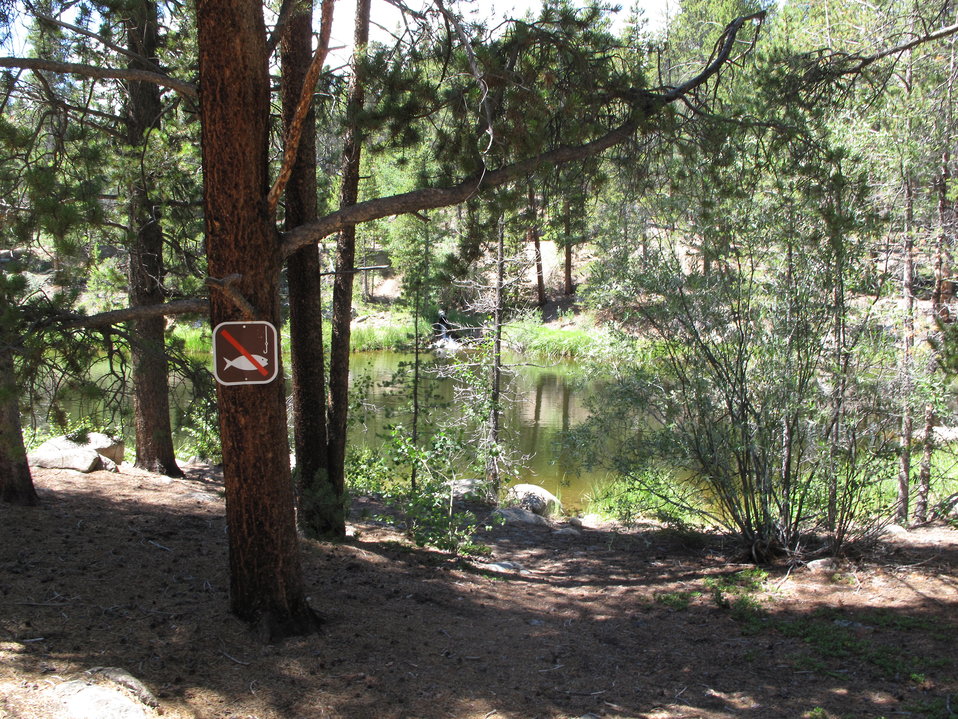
Leadville National Fish Hatchery

There are three lakes located mid hike. These lakes used to be where the fish were bread but becuase of whirling disease and our unpredictable nature the fish were moved into a more controlled enviorment. The lakes have now become part of the scenery.